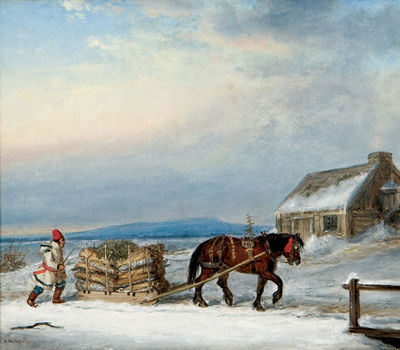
Figure, House and Sleigh in Snow, oil painting by Cornelius Krieghoff, 9.75 x 11.4 in.